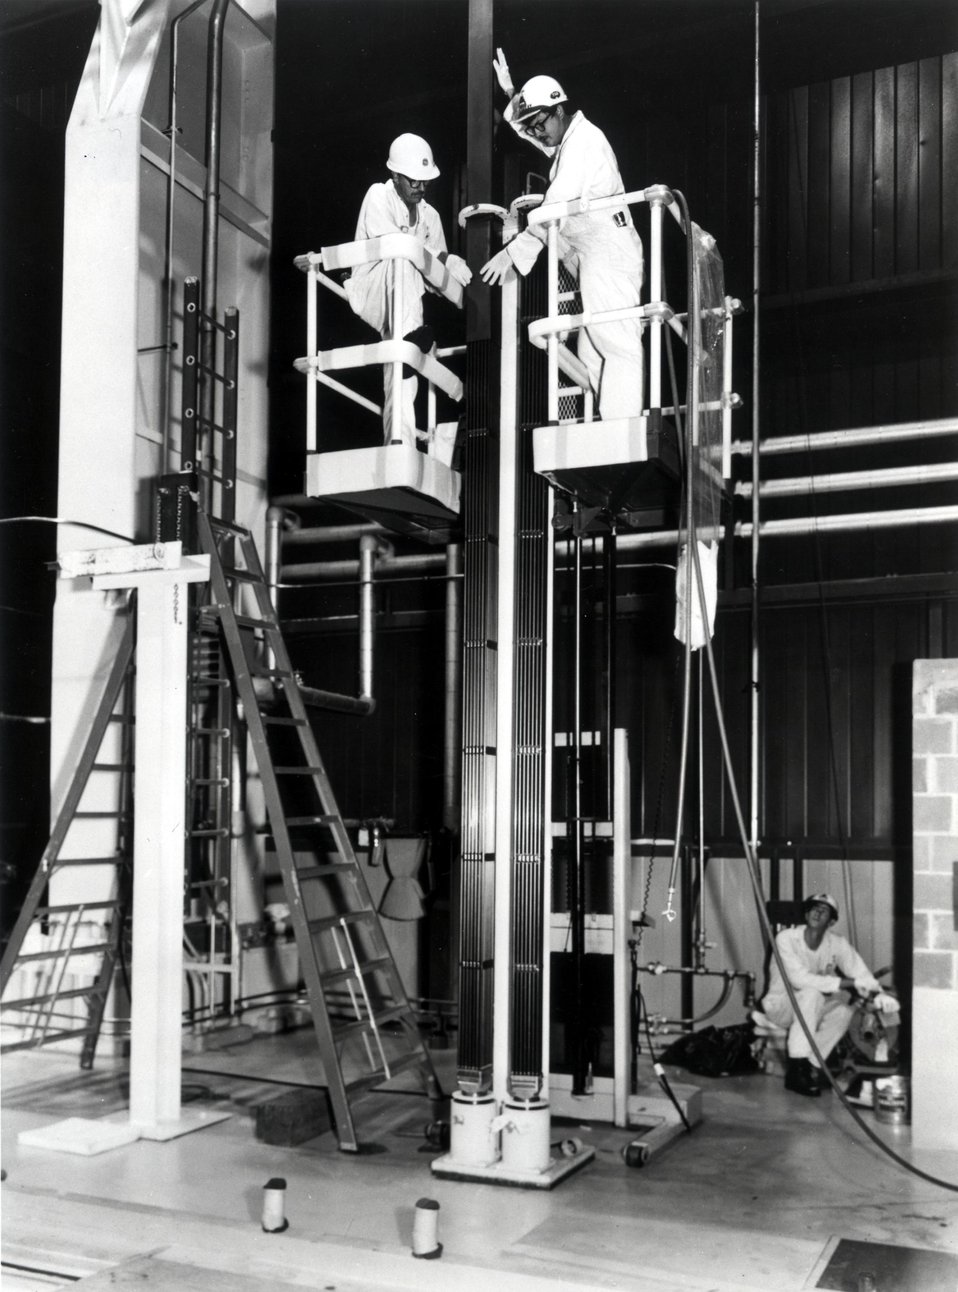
Nuclear fuel is inserted into the fuel chamber of TVA's Browns Ferry Nuclear Power Plant, Unit 1. The plant is located on Wheeler Lake, 10 miles southwest of Athena, Alabama. Circa 1973.